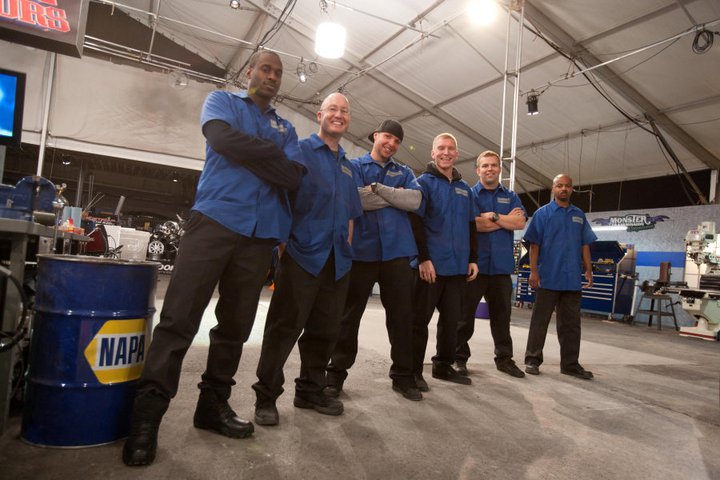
Car Warriors

(From left) 2nd Lt. Nick Baker, James Coppi, Senior Airman Travis Barron, Airman 1st Class Andrew Golseth, Maj. Mike Nielsen and Tech Sgt. Justin Woldridge, stand on the set of the Speed Channel's